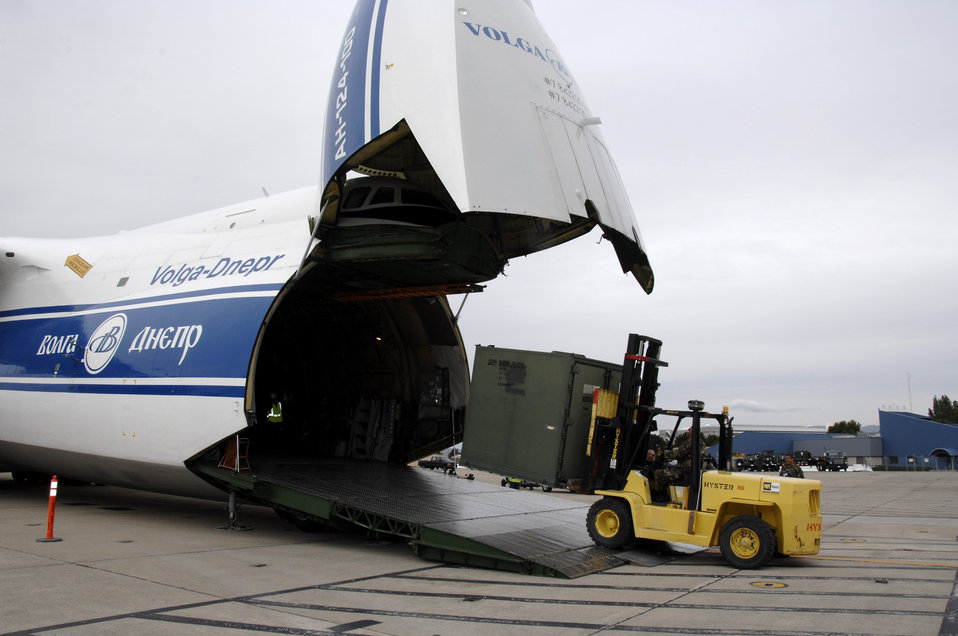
Russian aircraft transports ANG rescue helicopters

Airmen from the 129th Rescue Wing load cargo onto a Russian Volga-Dnepr AN-124 long-range heavy transport aircraft April 21 at Moffett Federal Airfield, Calif. The contracted AN-124 transported 129th Rescue Wing deployment cargo to Afghanistan because the high operations tempos of Operations Iraqi Freedom and Enduring Freedom have kept C-17 Globemaster III and C-5 Galaxy aircraft fully engaged.